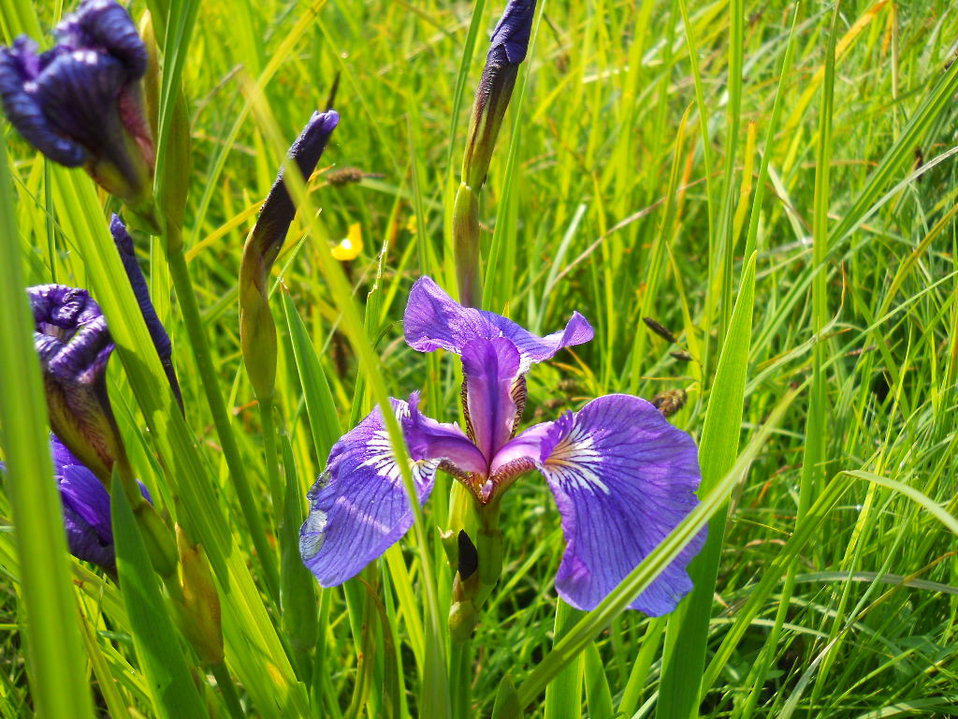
Iris

Credit: USFWS
Photo taken by a Salmon Camp participant during a nature photography activity.

Source and Contact: Kodiak National Wildlife Refuge